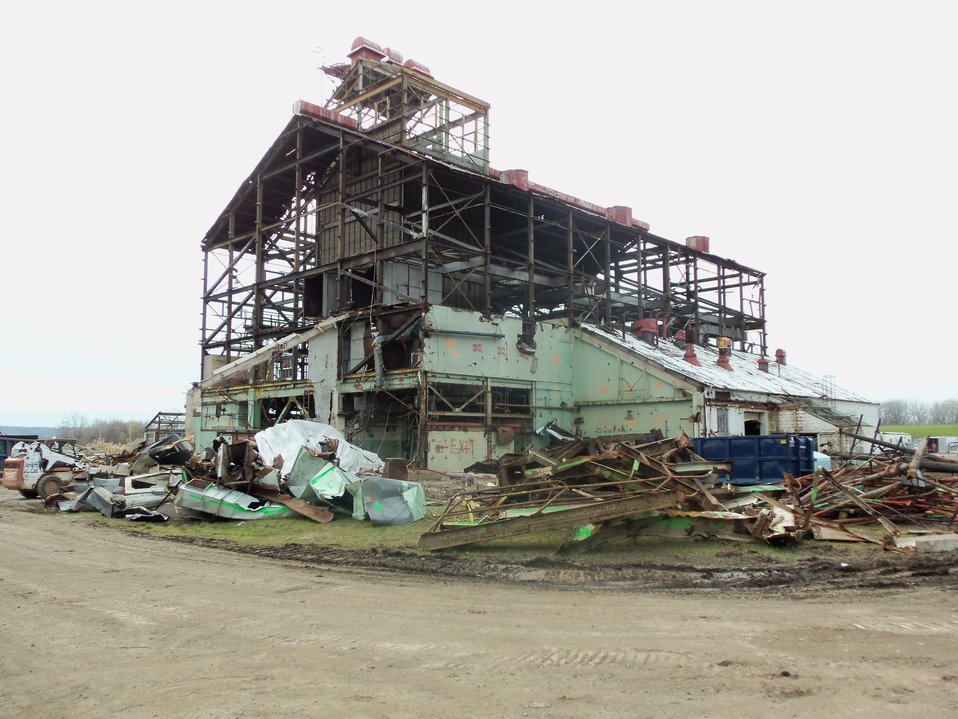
BLDG 401 SHELL WITH DEBRIS

Activities from the Niagara Falls Storage Site, which is associated with the former Lake Ontario Ordnance Works. Formerly Utilized Sites Remedial Action Program (FUSRAP), a program initiated in 1974 to identify, investigate and clean up or control sites that were part of the Nation's early atomic energy and weapons program. Activities at the sites that are eligible for FUSRAP were conducted by Manhattan Engineer District (MED) or the Atomic Energy Commission (AEC), both predecessors of the Department of Energy (DOE). The U.S. Army Corps of Engineers was assigned management of FUSRAP by Congress in 1997.